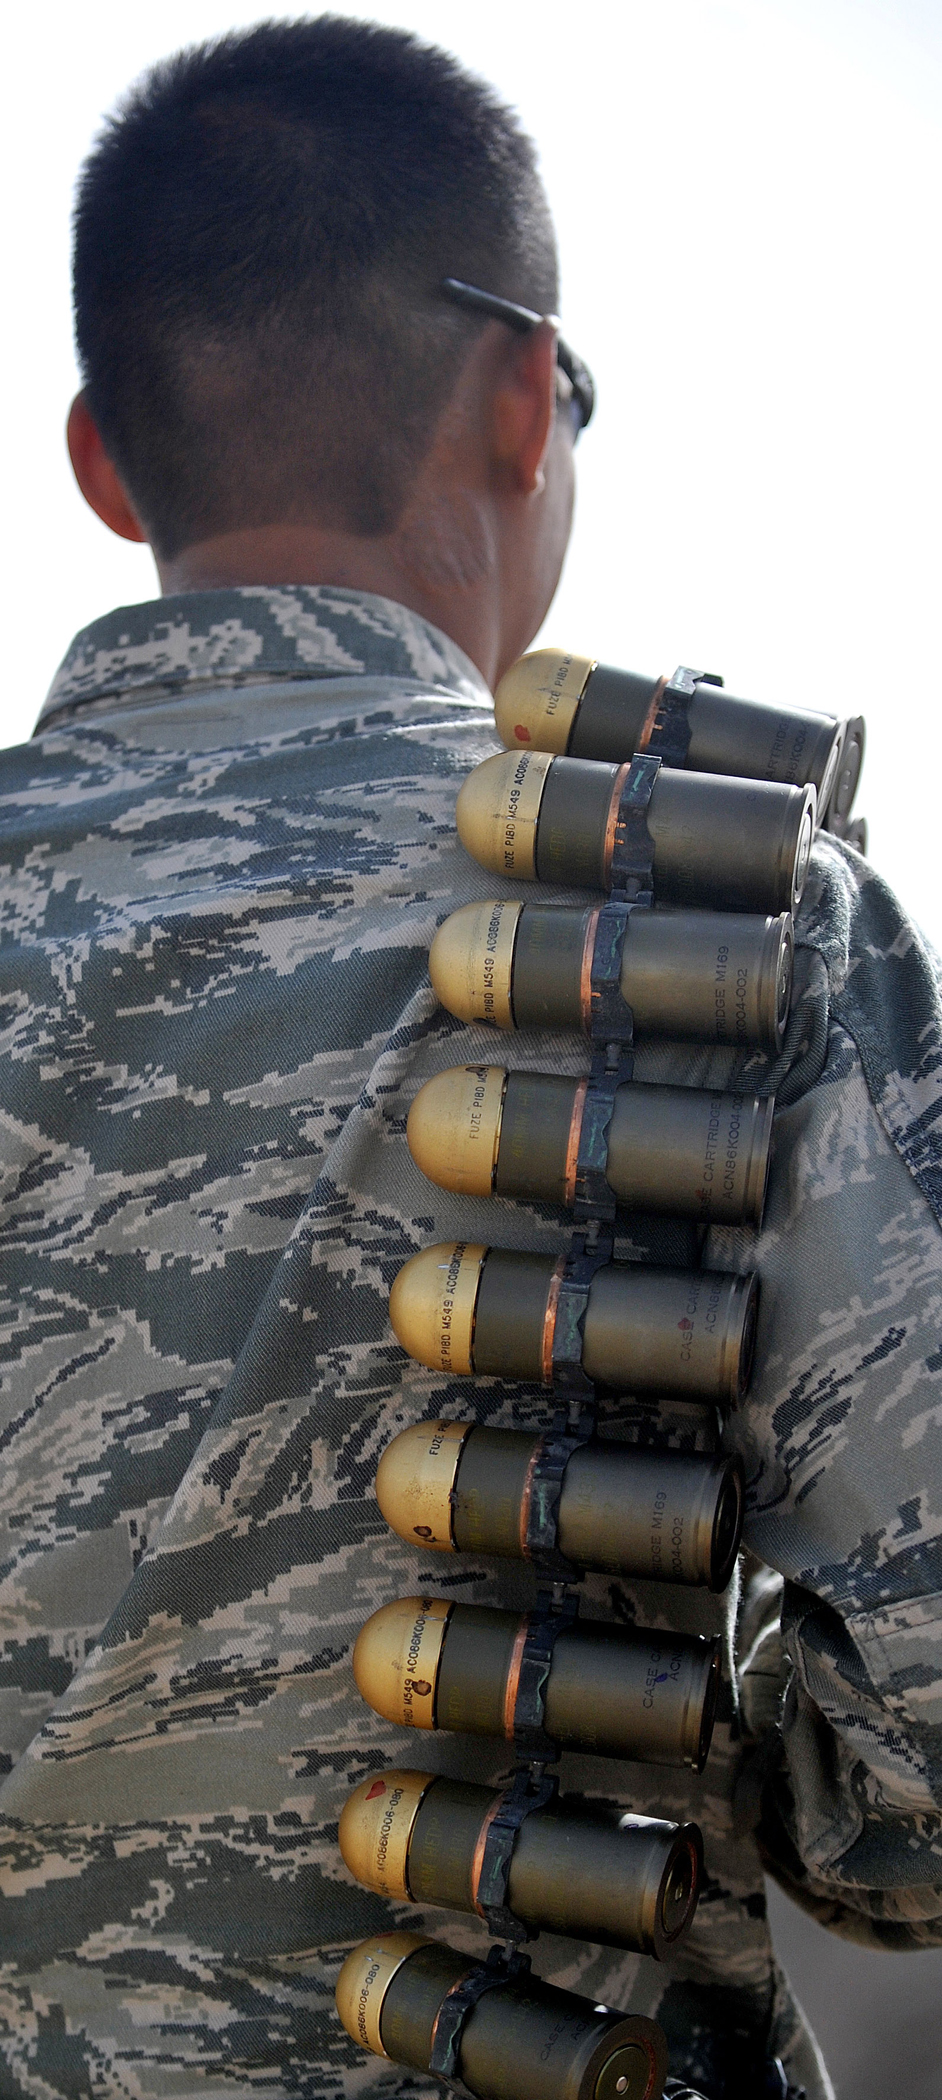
EOD Airmen

Senior Airman Jesse Mercado carries a link of 40-millimeter rounds on his shoulder to add to the pile of ammunition for detonation March 3, 2011, at Ali Air Base, Iraq. Airman Mercado is an explosive ordnance disposal technician assigned to the 407th Expeditionary Operations Support Squadron.